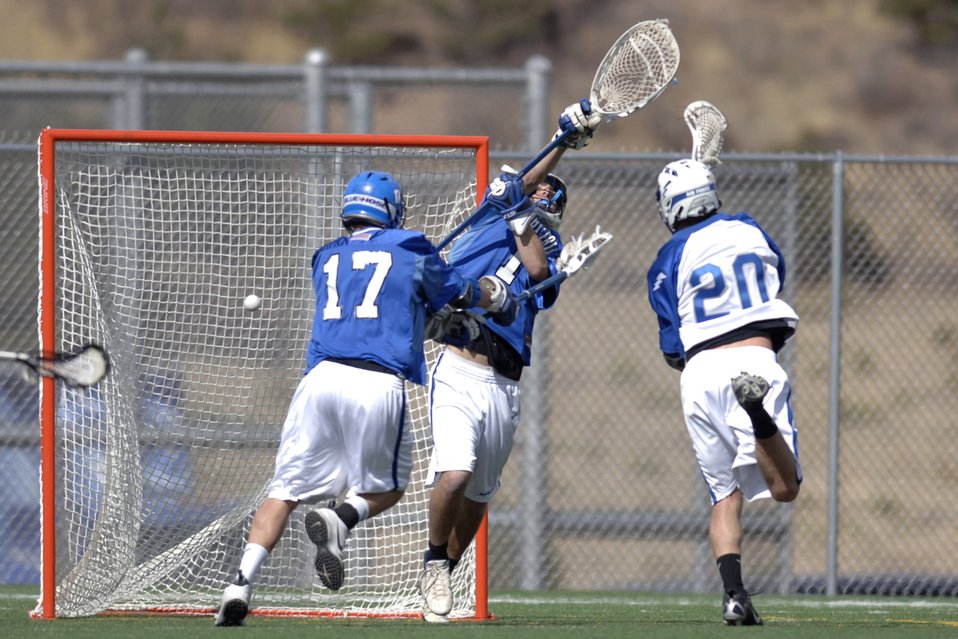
Falcons pick up 12-4 victory over Presbyterian

Air Force Academy senior Chris Tubesing scores his second goal of the day March 25 as Air Force defeated Presbyterian College 12-4 at the Cadet Lacrosse Stadium in Colorado Springs, Colo. The Falcons, undefeated at home, move to 2-4 on the season.